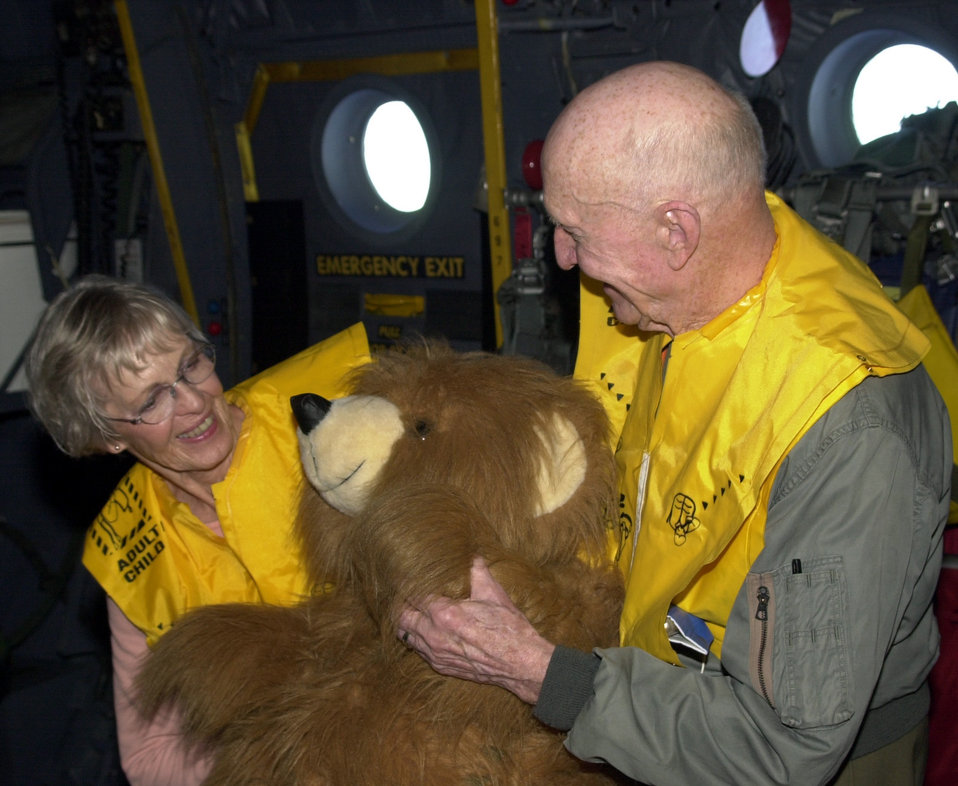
Dropping in for Christmas

OVER THE PACIFIC OCEAN -- Retired Col. Gail Halvorsen and his wife, Lorraine, inspect a stuffed bear before it was dropped Dec. 21 during the 50th anniversary flights of Christmas Drop. For 50 years people at Andersen Air Force Base, Guam, have gathered Christmas gifts and supplies to be airdropped to Pacific islanders. A C-130 Hercules and crew from Yokota Air Base Japan, did the duty this year, delivering the goods to the islands of Anatahan, Agrihan, and Alamgan, which are north of Guam. Among the cargo dropped was rice, fishing gear, and machetes. Halvorsen is the famed